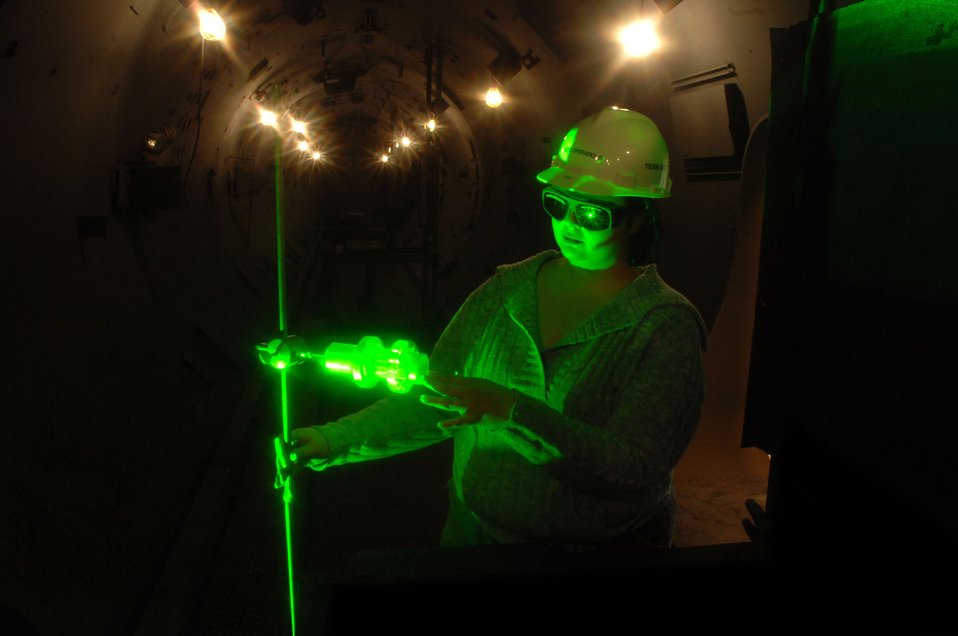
Light show

Katie Stephens aligns a projectile with a laser at the Arnold Engineering Development Center's large Hypervelocity Ballistic Range G facility at Arnold Air Force Base, Tenn. The laser assesses the condition of a projectile during a specific stage of flight. The Range G launcher is the largest, two-stage, light-gas gun system in the United States that can launch extremely high-fidelity missile simulations at hypervelocity speeds. Ms. Stephens is an optical diagnostics group engineer with Aerospace Testing Alliance's technology and analysis branch.